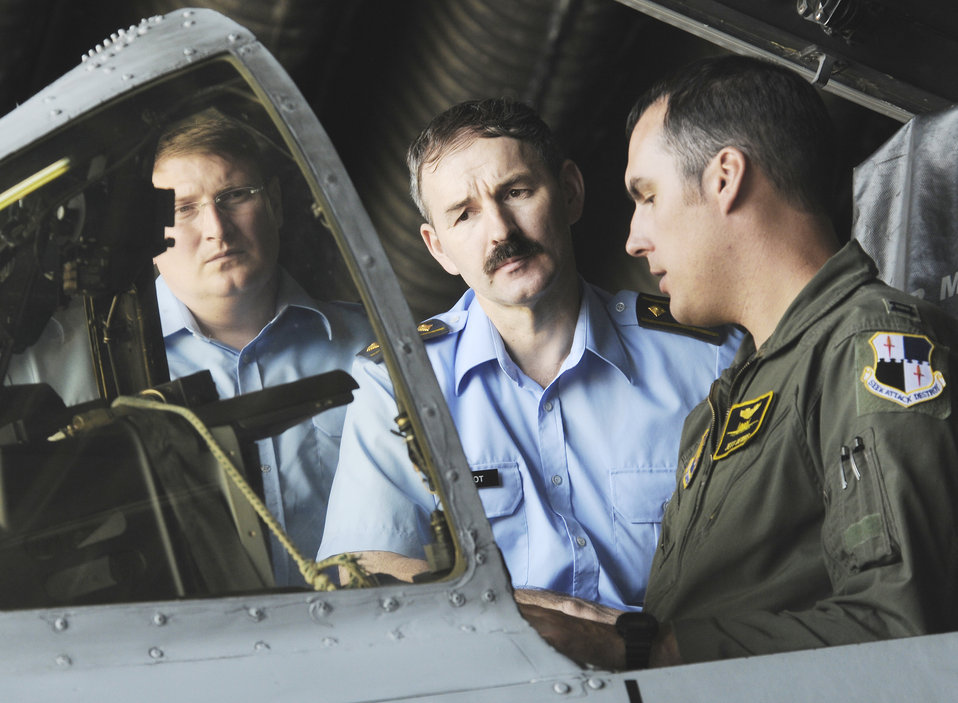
USAFE Airmen retool to enhance tradition of Building Partnerships

Capt. Jeffery Dennis describes the elements of an A-10 Thunderbolt II to Sasa Jovanovic and Col. Zlatko Sobot during their visit to Spangdahlem Air Base, Germany, July 16, 2009. Four members of the Serbian air force came to Spangdahlem to learn how a fighter squadron runs as part of their visit to the 603rd Air and Space Operations Center located at Ramstein Air Base, Germany. Captain Dennis is from the 81st Fighter Squadron. Mr. Jovanovic is a B-2 Spirit desk officer for the 204th Air Base of the Serbian air force. Colonel Sobot is the chief of the Serbian Air Force and Air Defense Operation Center.